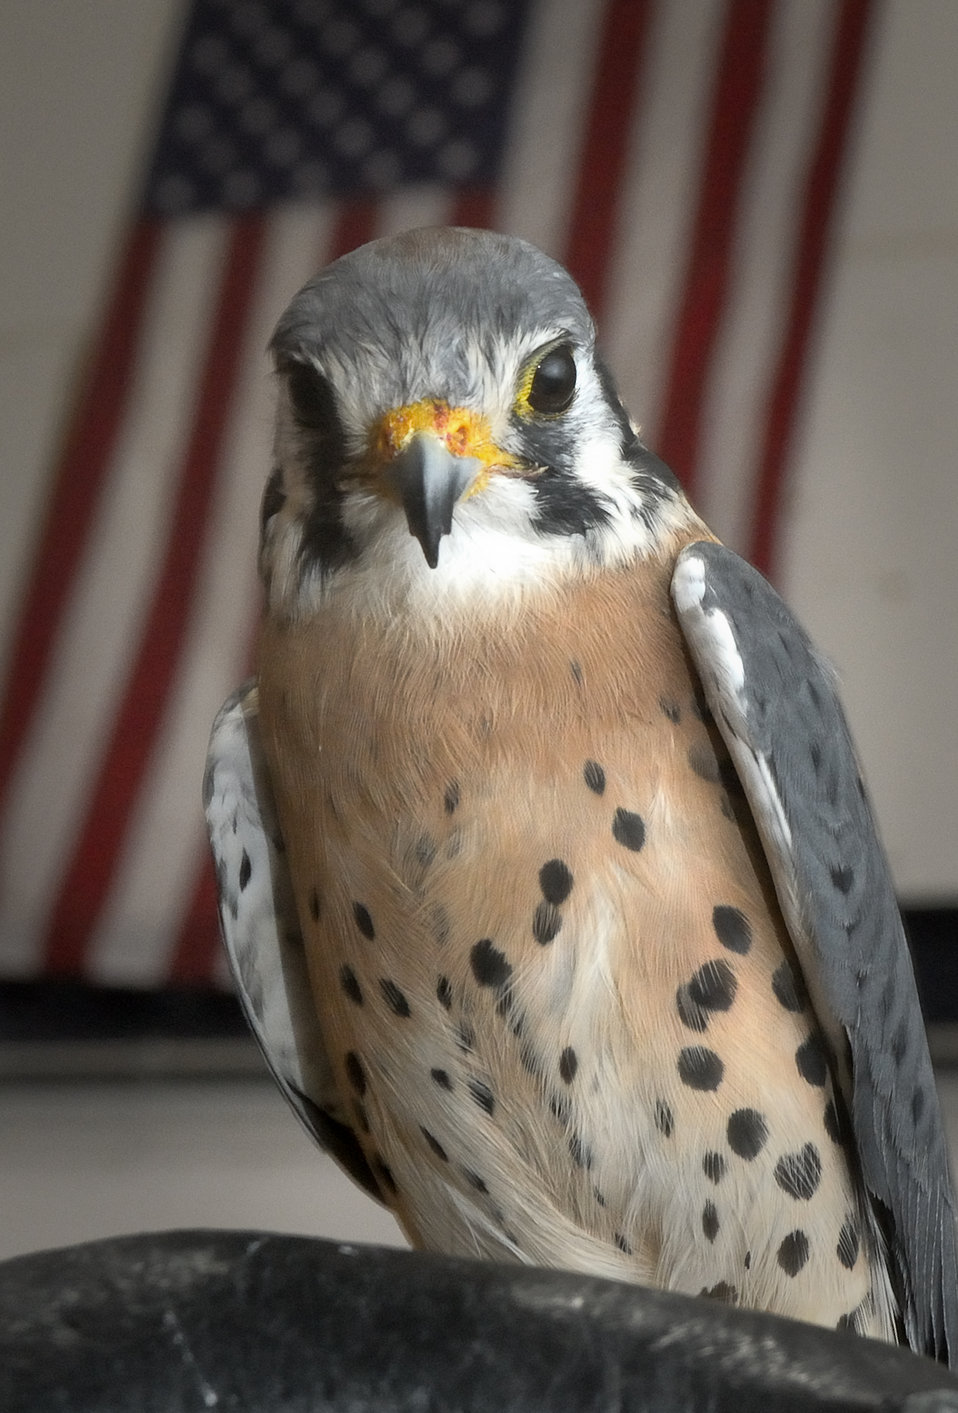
Small kestral captures school's attention

Cadet 3rd Class Danielle Cortez and